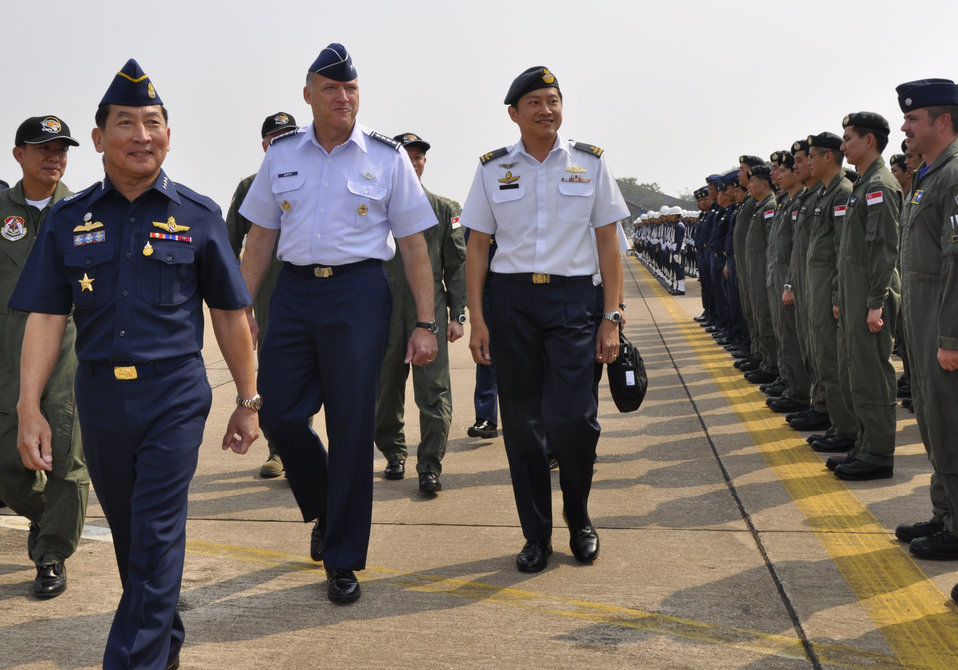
Pacific partners close Cope Tiger with ceremony

Gen. Gary North walks with Air Chief Marshal Itthaporn Subhawong (left) and Brig. Gen. Ng Chee Meng (right) in front of a formation of U.S., Singaporean and Thai military personnel on the last day of the Cope Tiger exercise March 12, 2010, at Korat Royal Thai Air Force Base, Thailand. General Meng is the Republic of Singapore Air Force chief of air force, Air Chief Marshal Subhawong is Royal Thai Air Force commander in chief and General North is the Pacific Air Forces commander.